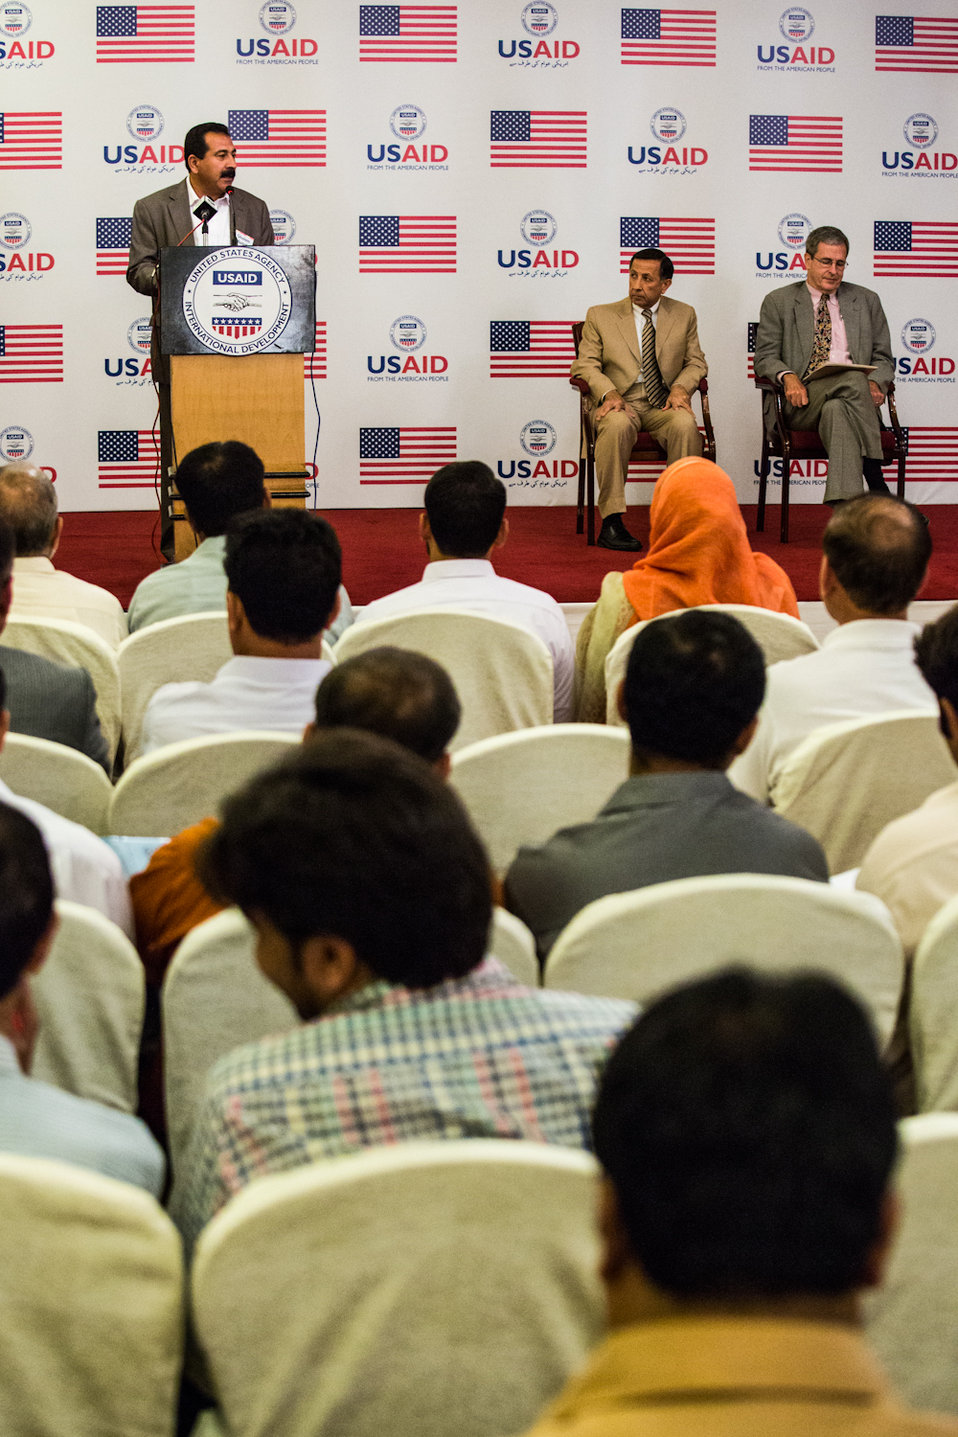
Islamabad, September 26 2012 - Ghulam Mustafa, Deputy Director, Gilgit Ministry of Agriculture, speaking at the event.